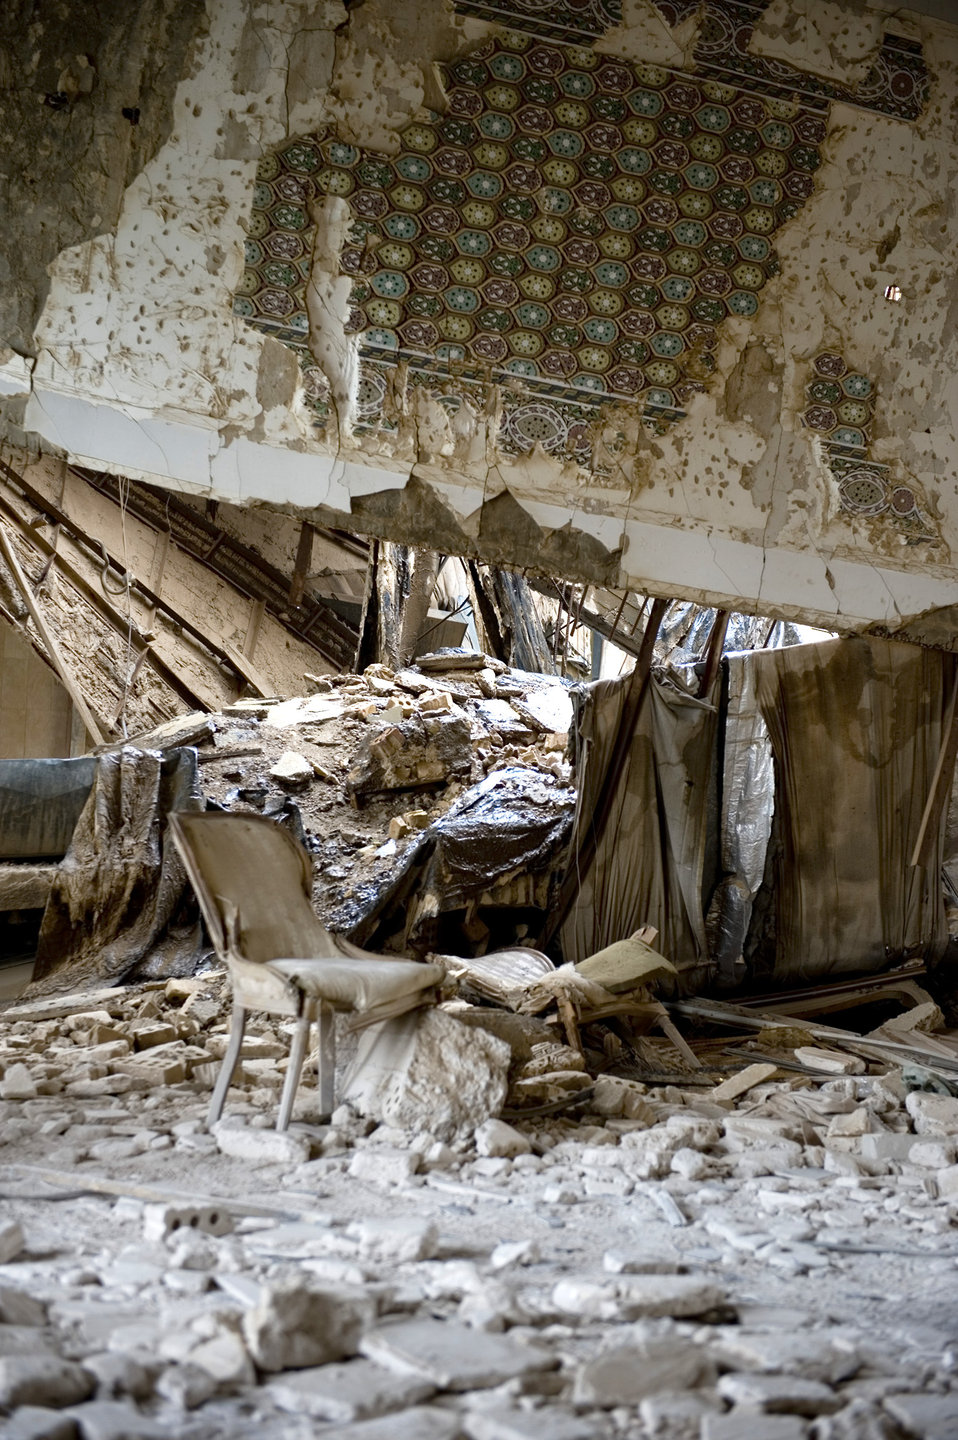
Chapel staff bolsters morale, mission focus from a unique perspective

The remnants of the Baath Party House lie in disarray Jan. 29, 2011, in Baghdad, Iraq. The house was one of the first buildings hit during Operation Iraqi Freedom because intelligence sources believed Saddam Hussein was watching a movie here at the time.